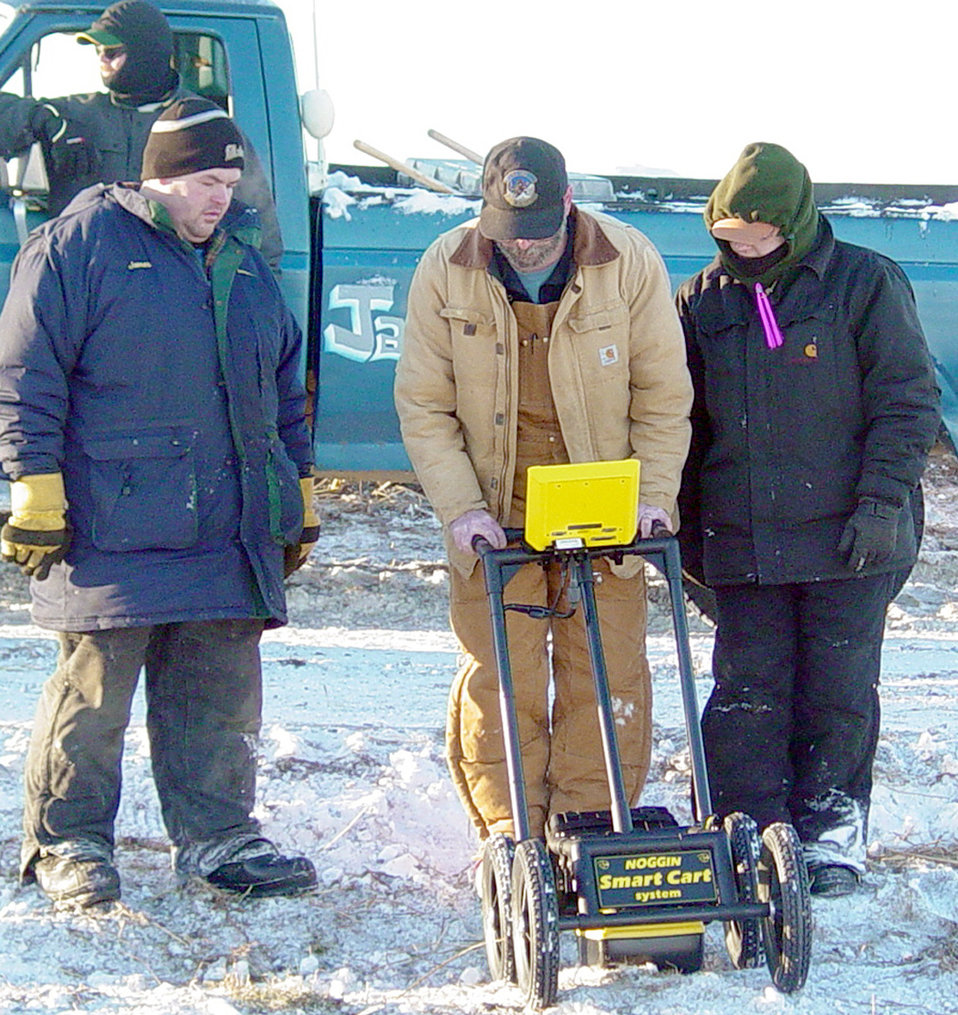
Reading radar

PORT HEIDEN, Alaska -- Tom Donley reads the screen on the ground-penetrating radar as Annie Clinton (right), a forensic anthropologist, observes. Local resident Jimmy Christensen (left), like many residents, was interested in how the Air Force went about finding unmarked grave sites. Mr. Donley is assigned to the 611th Civil Engineer Squadron's environmental flight.